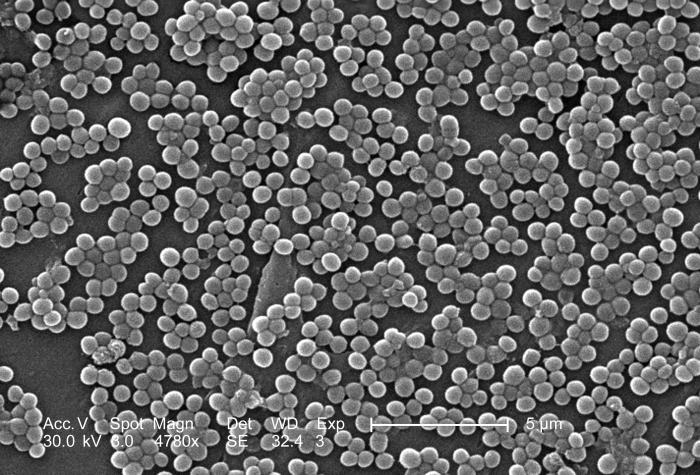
This 2005 colorized scanning electron micrograph (SEM) depicted numerous clumps of methicillin-resistant Staphylococcus aureus bacteria, commonly referred to by the acronym, MRSA; Magnified 4780. Recently recognized outbreaks, or clusters of MRSA in community settings have been associated with strains that have some unique microbiologic and genetic properties, compared with the traditional hospital-based MRSA strains, which suggests some biologic properties, e.g., virulence factors like toxins, may allow the community strains to spread more easily, or cause more skin disease. A common strain named USA300-0114 has caused many such of outbreaks in the United States. See PHIL 10045 for a colorized version of this image.